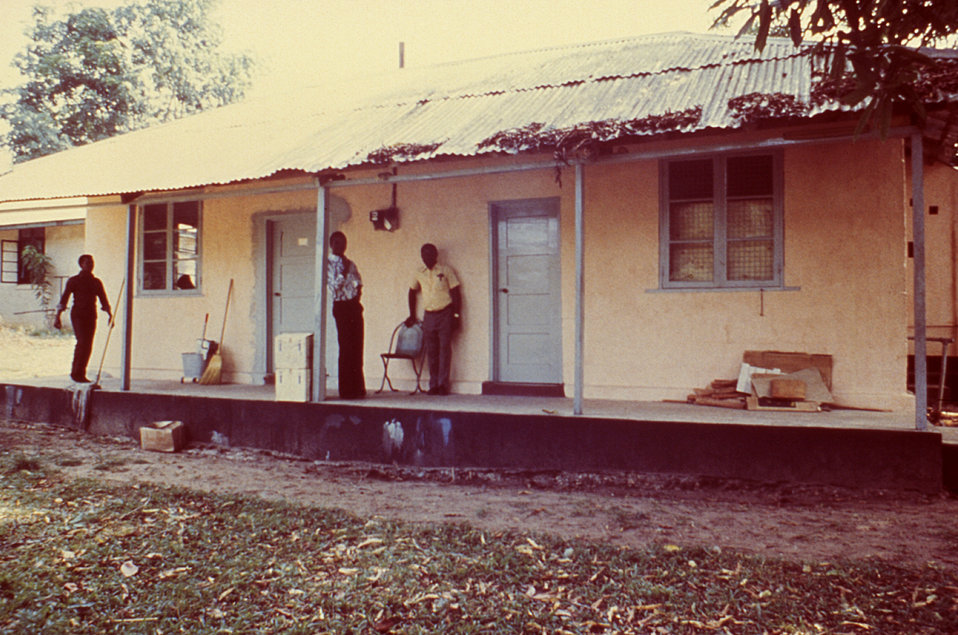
This 1977 image depicts the front entrance of the Kenema Laboratory located in Sierra Leone with some of the staff members.